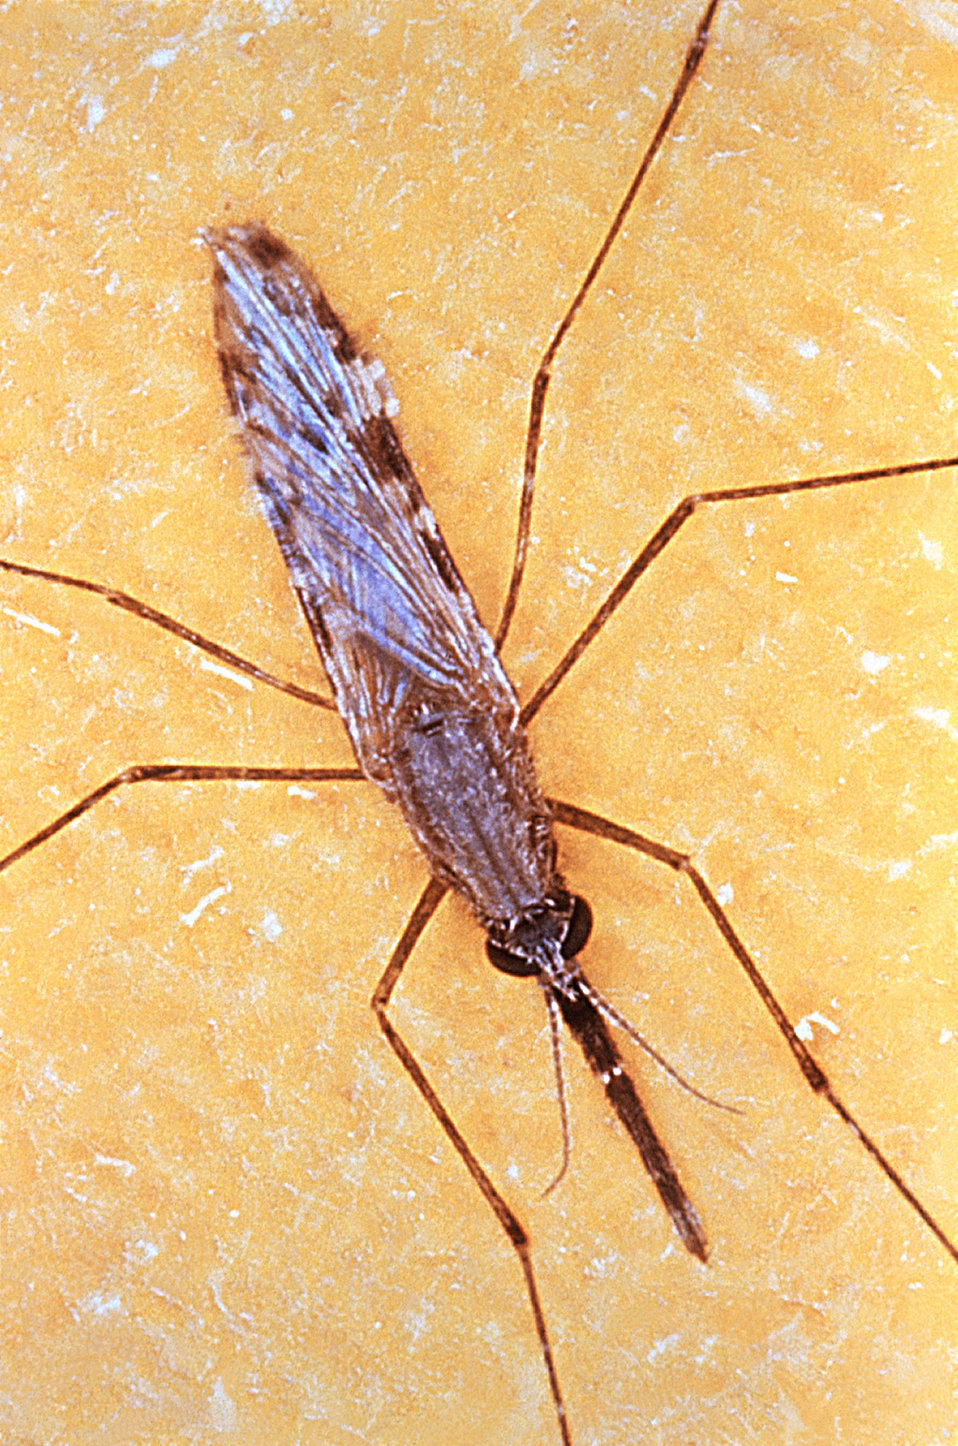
This is an Anopheles gambiae mosquito, which is a known vector for the malarial parasite.